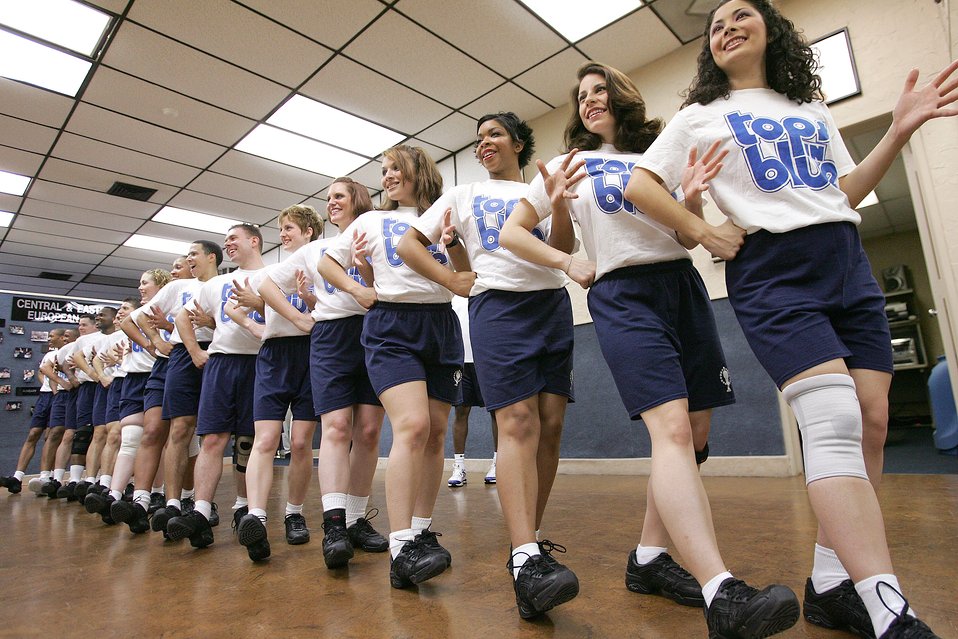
Tops In Blue 2007 rehearses for anniversary season

Tops in Blue 2007 cast members rehearse in their production center Feb. 7 at Lackland Air Force Base, Texas. This year's theme is